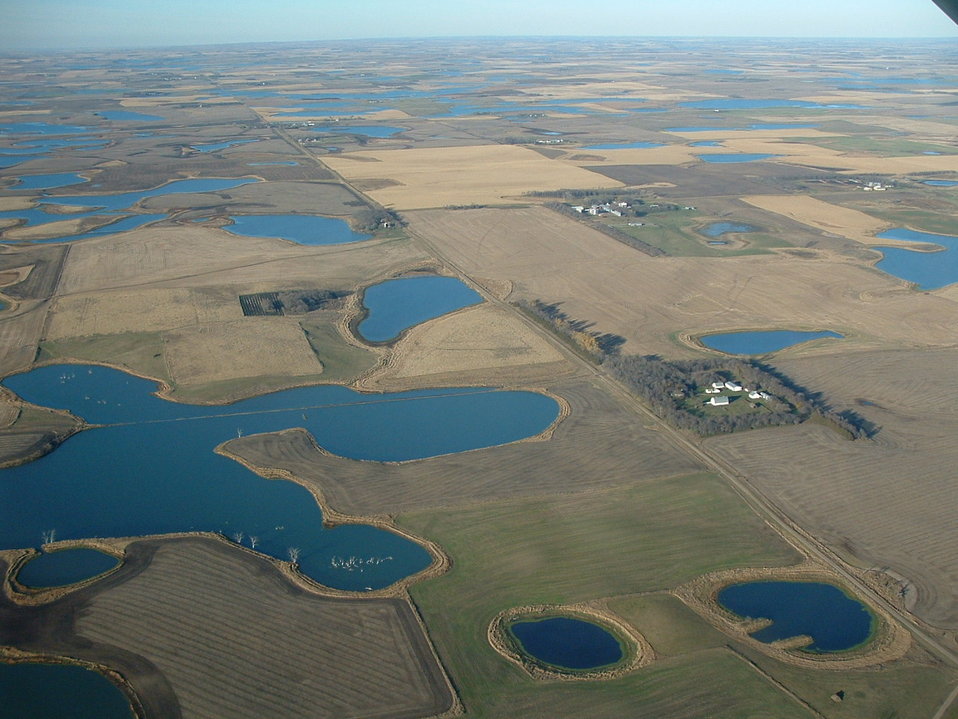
Changes

Prairie potholes once surrounded by nothing but grass are now part of agricultural fields, homesteads, shelterbelts, and roads. Waterfowl Production Areas and easements preserve habitat in a very fragmented landscape.